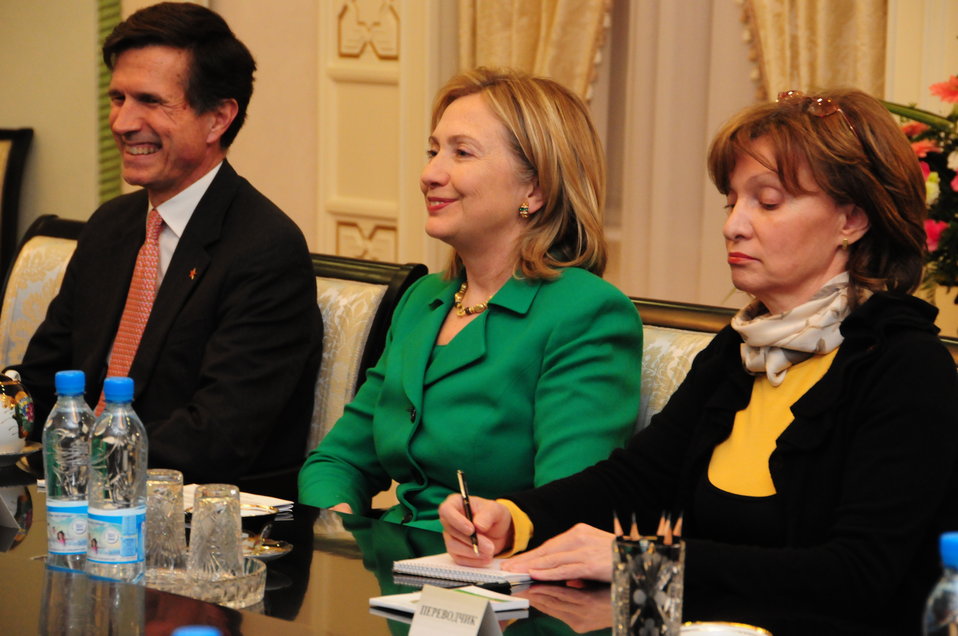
Secretary Clinton and Assistant Secretary Blake Meet With Uzbek President Karimov

U.S. Secretary of State Hillary Rodham Clinton and U.S. Assistant Secretary of State for South and Central Asian Affairs Robert O. Blake, left, smile at the top of the meeting with Uzbekistan’s President Islam Karimov in Tashkent, Uzbekistan, on December 2, 2010.